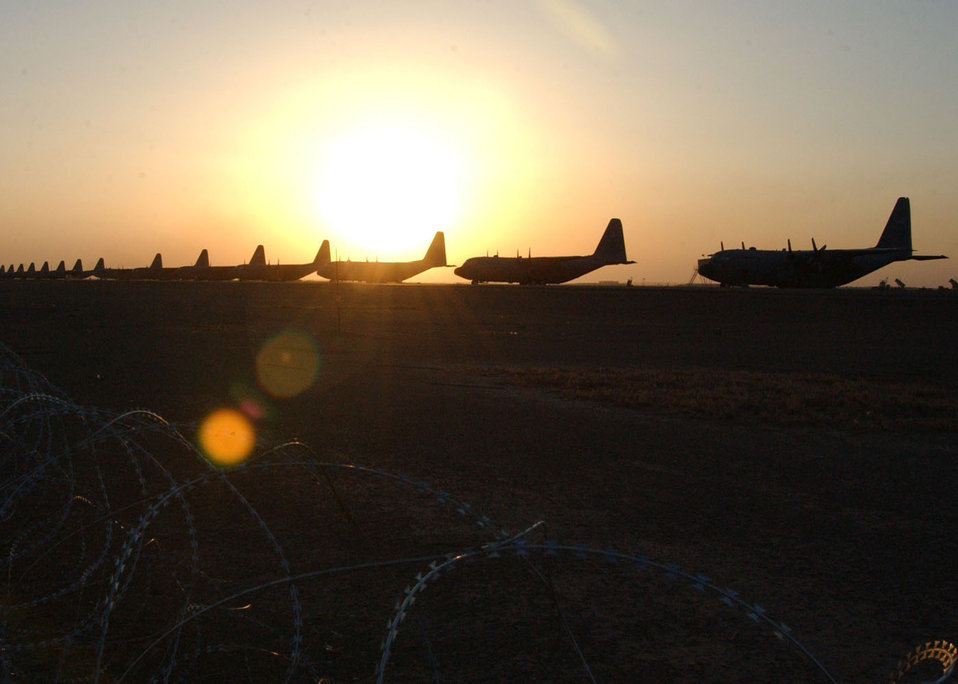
Southwest Asia sunset

OPERATION IRAQI FREEDOM -- A row of C-130 Hercules are parked along the 485th Air Expeditionary Wing's ramp at a forward-deployed location in Southwest Asia. Seven C-130 units combined here to form the largest collection of the aircraft in the world, according to officials.